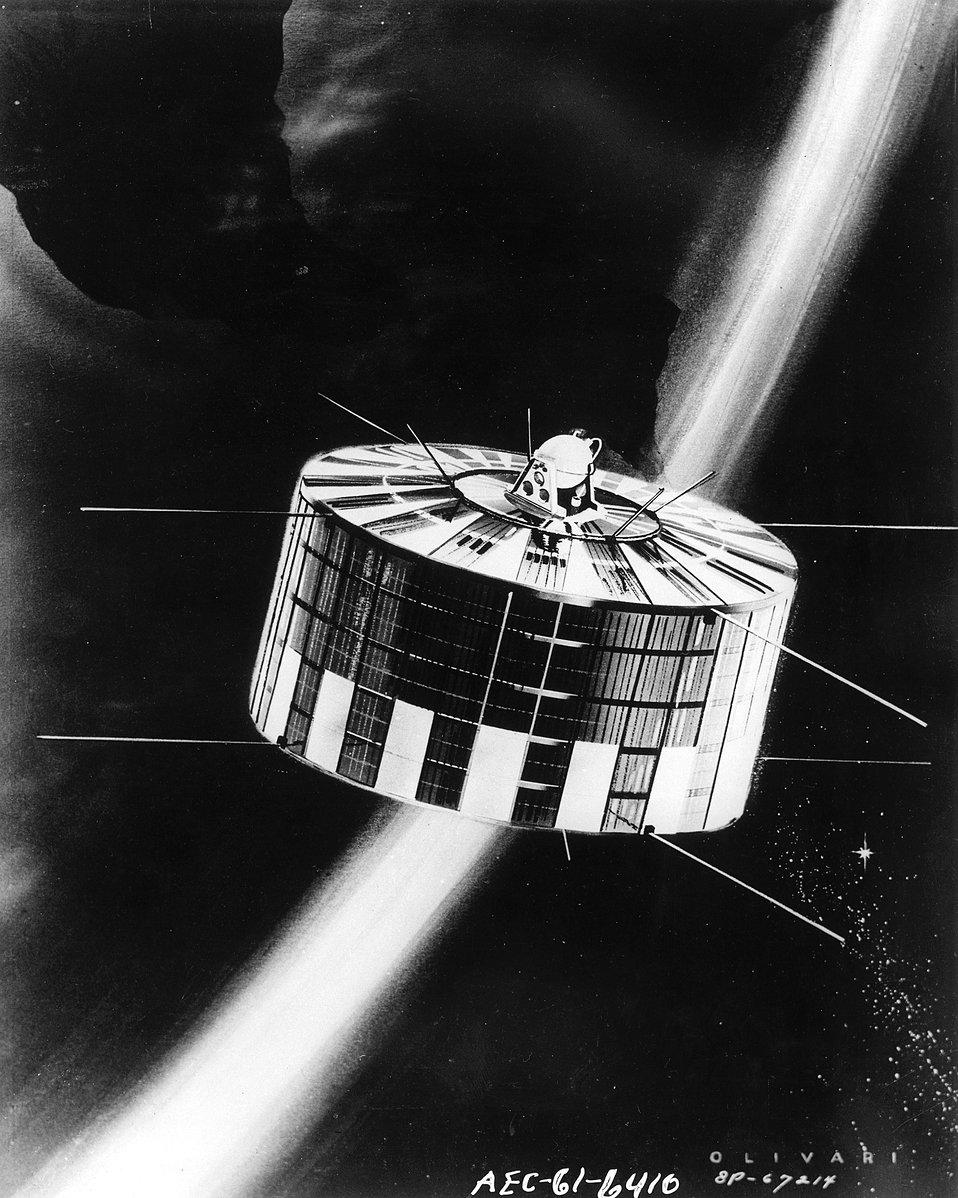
This is an artist's concept of the Navy's navigational satellite, the first to receive auxiliary power from atomic energy.